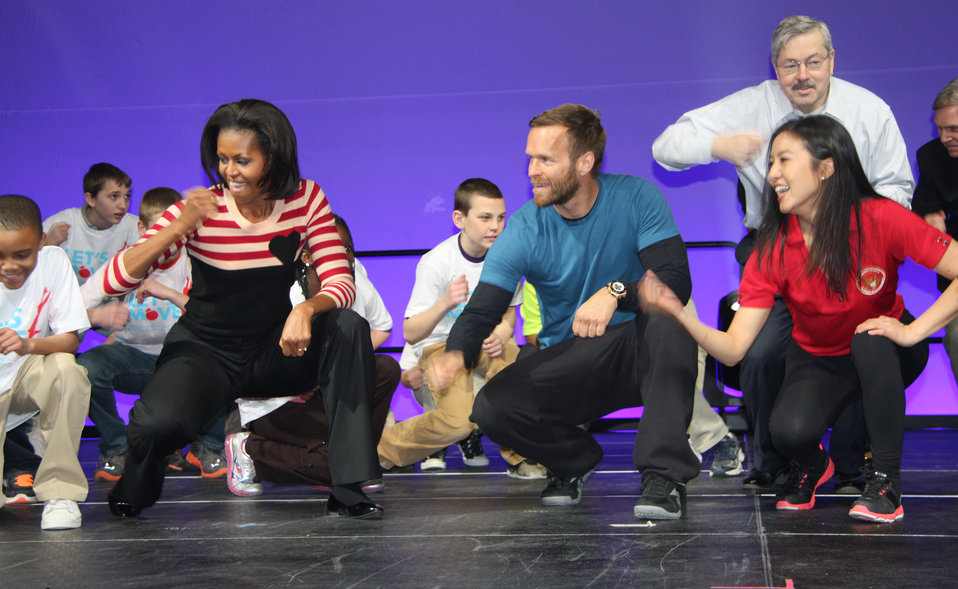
Agriculture Secretary Tom Vilsack joined First Lady Michelle Obama in Des Moines, IA, to kick off a nationwide tour celebrating the second anniversary of 'Lets's Move'. They were joined by fitness expert Bob Harper, WNBA star Tamika Catchings, Olympians Michelle Kwan and Shawn Johnson and others, including 10,000 sixth and seventh graders. The event took place on Thursday, February 9, 2012.